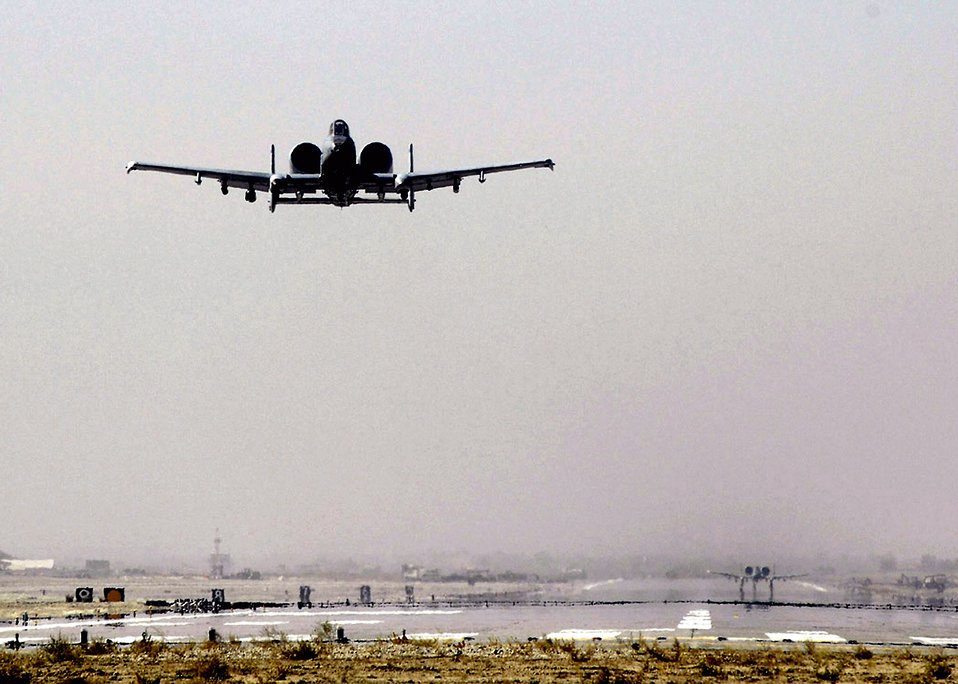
May 7 airpower summary: A-10s conduct show of force

An A-10 Thunderbolt II takes off from Bagram Airfield, to fly a combat sortie in support of Operation Enduring Freedom. The A-10 has excellent maneuverability at low air speeds and altitude, and is a highly accurate weapons-delivery platforms.